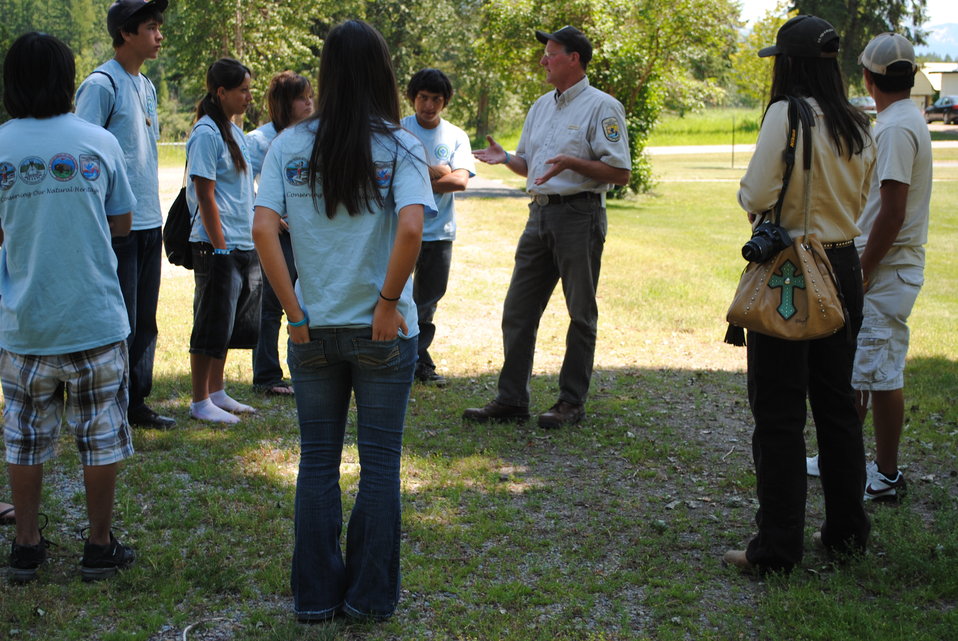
Project Leader Mark Maskill Reiterates the Important Messages of the Secretary and Director